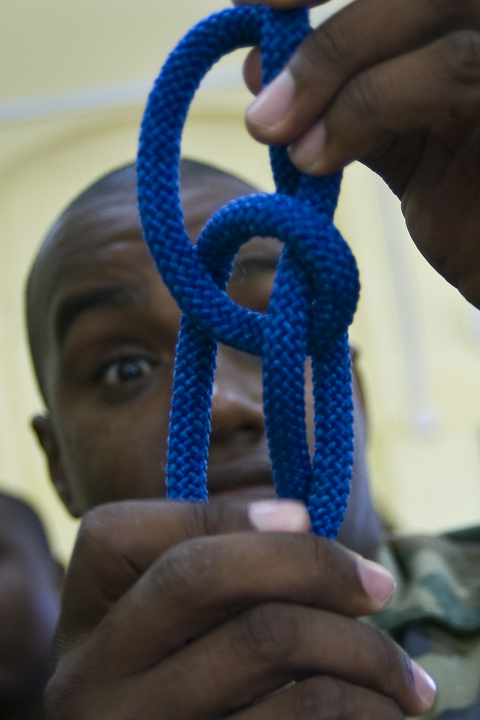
St. Lucia police team with Airmen during Operation Southern Partner

Constable Issac Gustav of the Royal St. Lucia police force's special service unit successfully ties a figure eight knot during a subject matter expert exchange on basic rappelling for Operation Southern Partner June 1 in La Toc, St. Lucia.